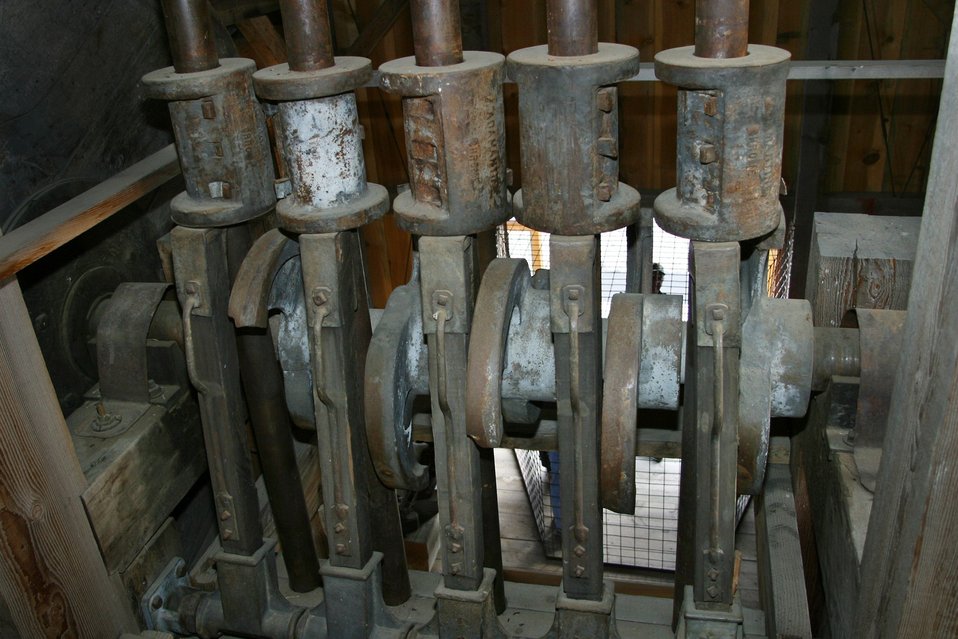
A replica of the Rabbit Mine 1926 stamp mill near Greenhorn in the Blue Mountains of eastern Oregon. It is used to interpret the importance of mining in western history, and the relationship of gold mining to the westward migration story.